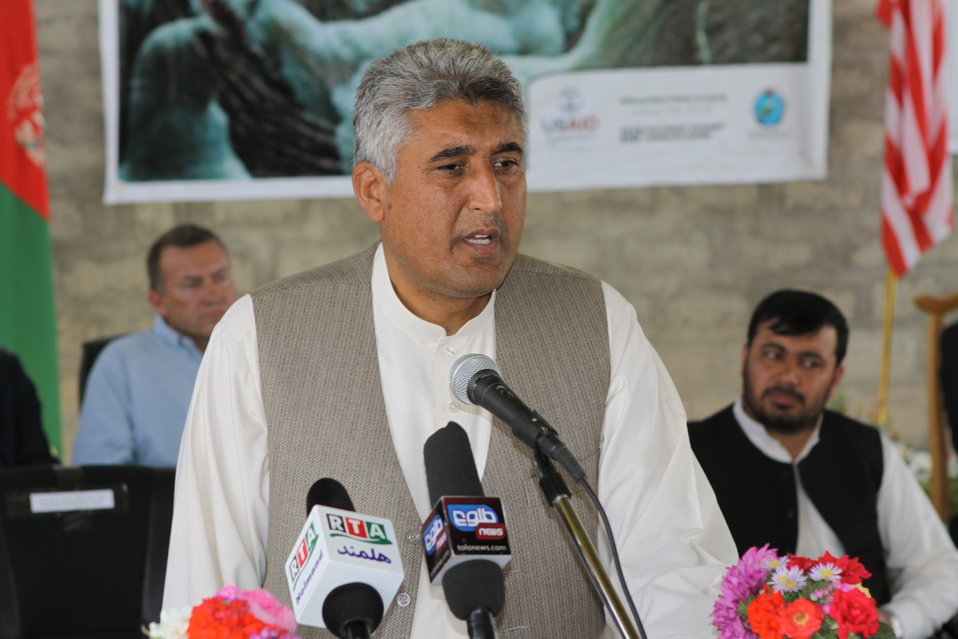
Bolan Poultry Farm